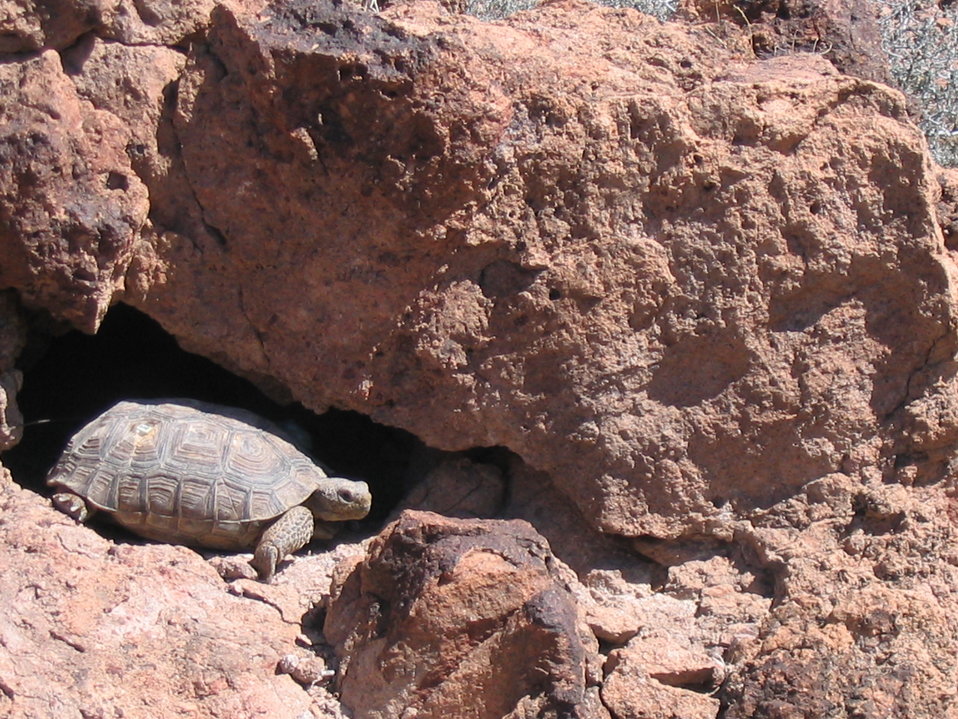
Mojave Desert Tortoise (Gopherus agassizii)

Desert tortoise (Gopherus agassizii) commonly known as the Mojave desert tortoise.